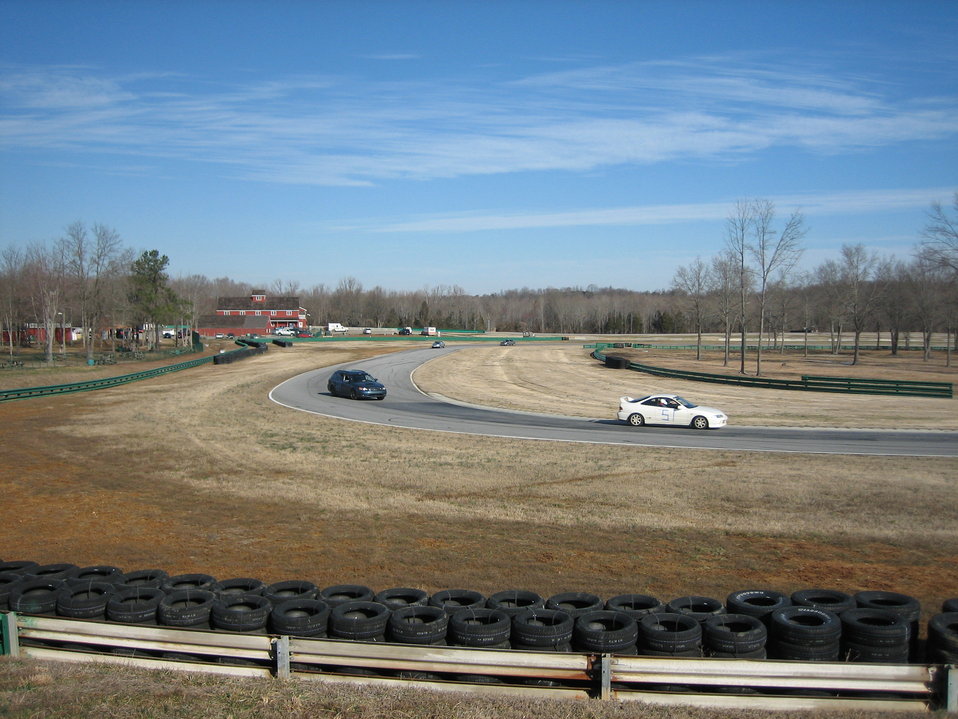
Author: Zen Hooloovoo, No Copyright - this is an original image for use by anyone.